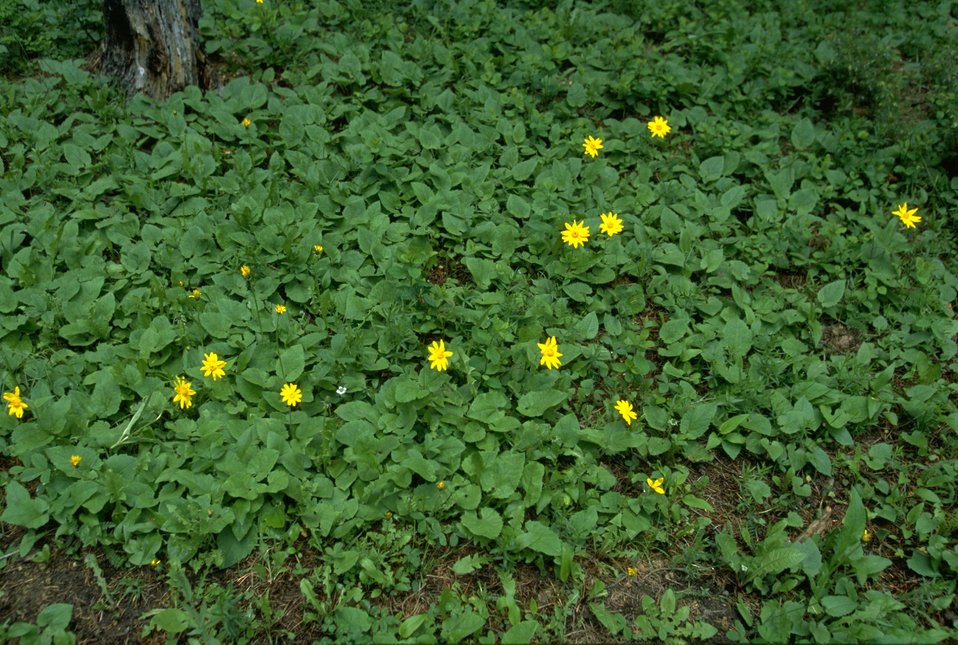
Scenic view of yellow flowers against a background of green foliage